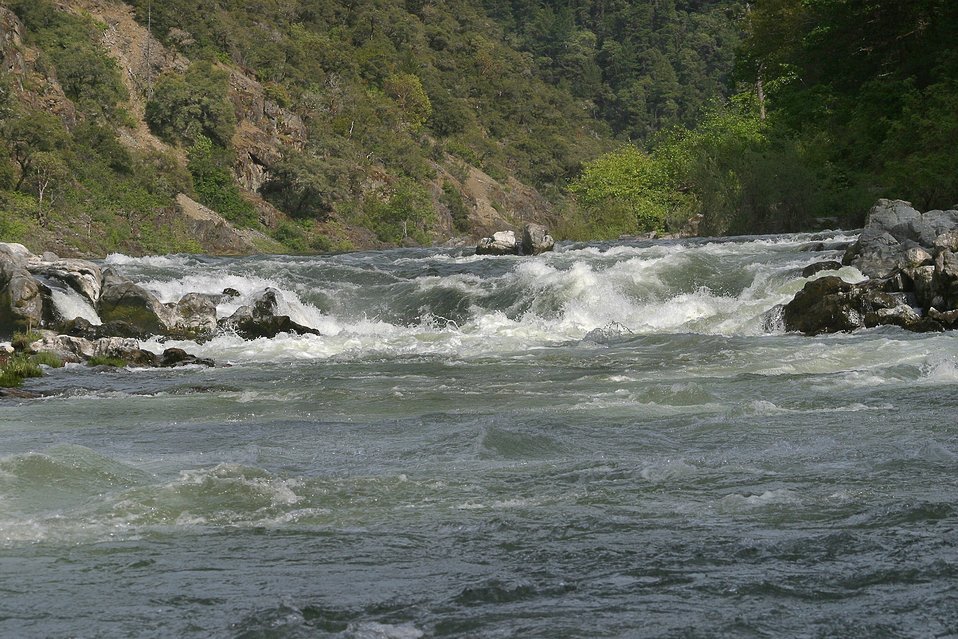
Rainie Falls on the Wild section of the Rogue River from Grave Creek to Foster Bar. 3100 cfs at Grants Pass and 5300 at Agness.